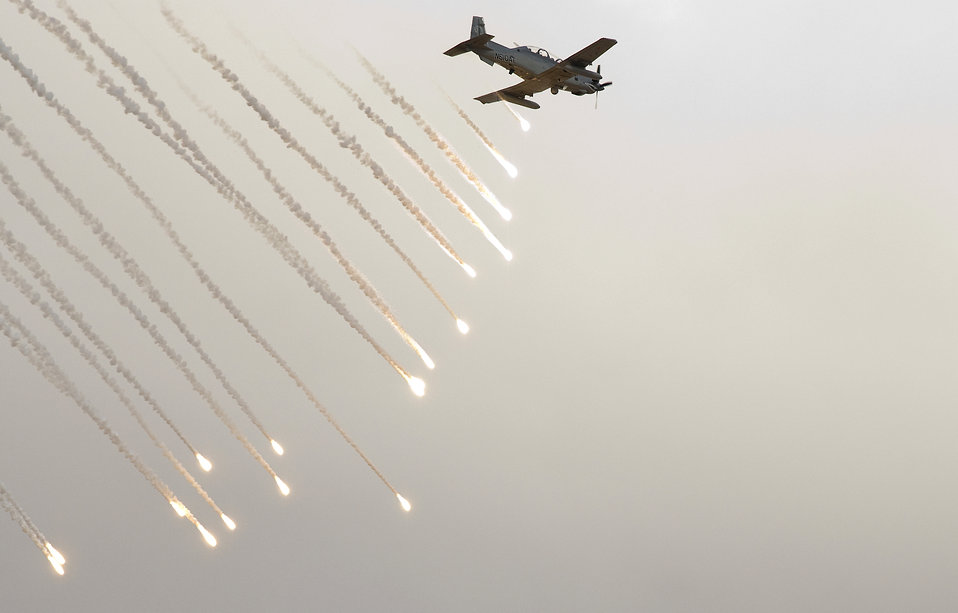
Light-attack aircraft

A Hawker Beechcraft AT-6C, modified for various light-attack missions, releases flares during an operational test Oct. 5, 2010, over the Southern Arizona desert. It was the first time flare buckets, or aircraft survivability equipment, were mounted onto the airplane and fully integrated with the control system on board. A team of pilots and engineers certified that the airplane could separate the flares correctly while learning if the modification would have adverse effects on the airplane's handling.